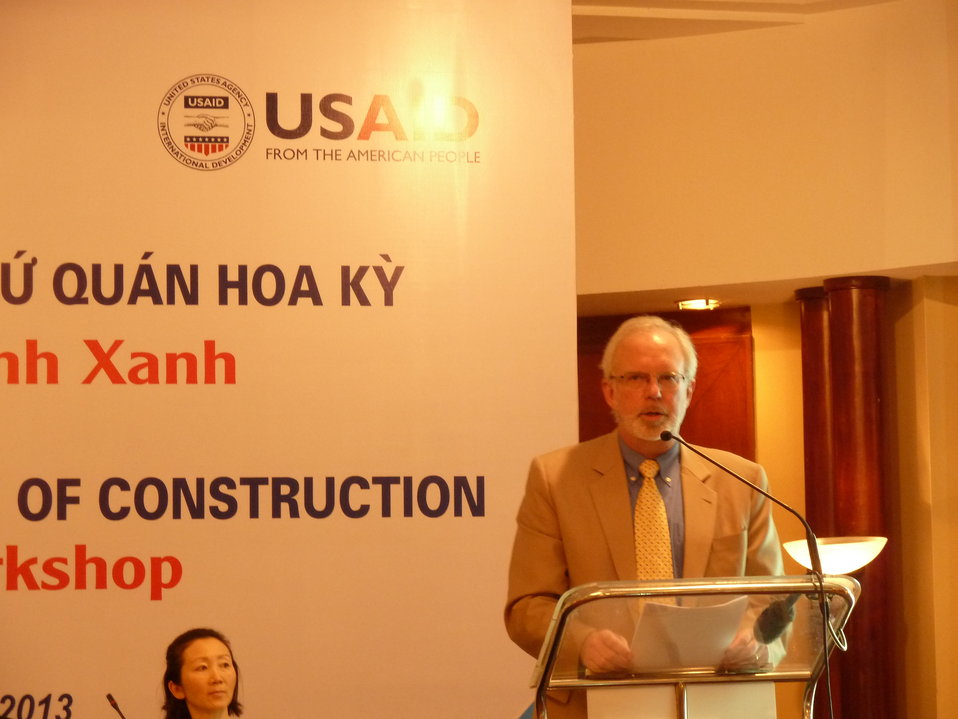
U.S. Ambassador David Shear Speaks at Green Building and Energy Workshop

Hanoi, Vietnam
April 16, 2013